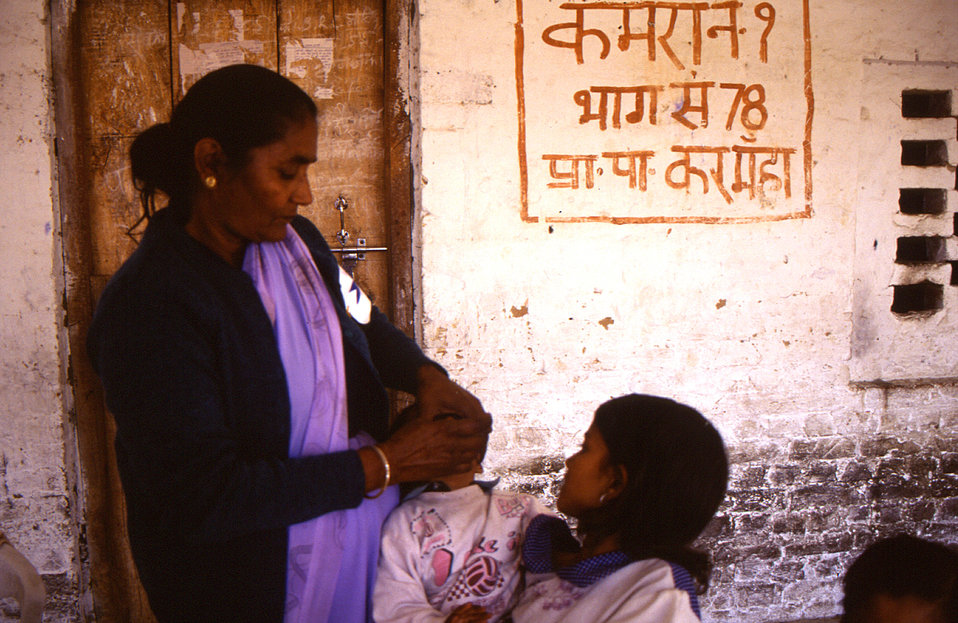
The National Immunization Days (NID) were effective at immunizing thousands of children throughout India. Here we see that older siblings were often responsible for bringing their younger brothers and sisters with them, so that they too could receive the polio vaccine. This image showed a small child, being held by another child, as he received his polio vaccine from a public health care practitioner. After having received his vaccine, the child would also have his finger marked by an ink marker, and in this way, documented as having actually received the immunization, as well as also preventing the child from receiving additional doses during the immunization campaign. The image was provided by Chris Zahniser, B.S.N., R.N., M.P.H., a STOP Transmission of Polio (STOP) immunization initiative team member and photographer. Ms. Zahniser was at the time assigned to the state of Uttar Pradesh in northern India, and spent three months working in the Districts of Gorakhpur and Deoria.